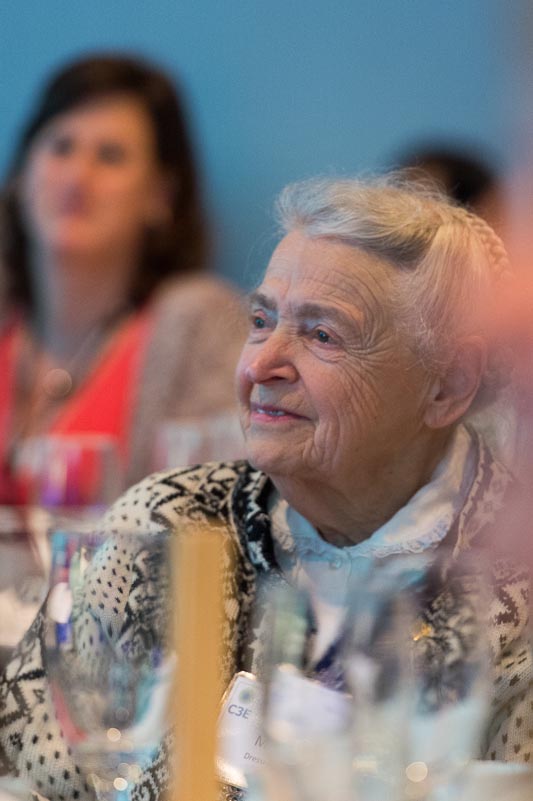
Millie Dresselhaus

Recipient of the C3E Lifetime Achievement Award